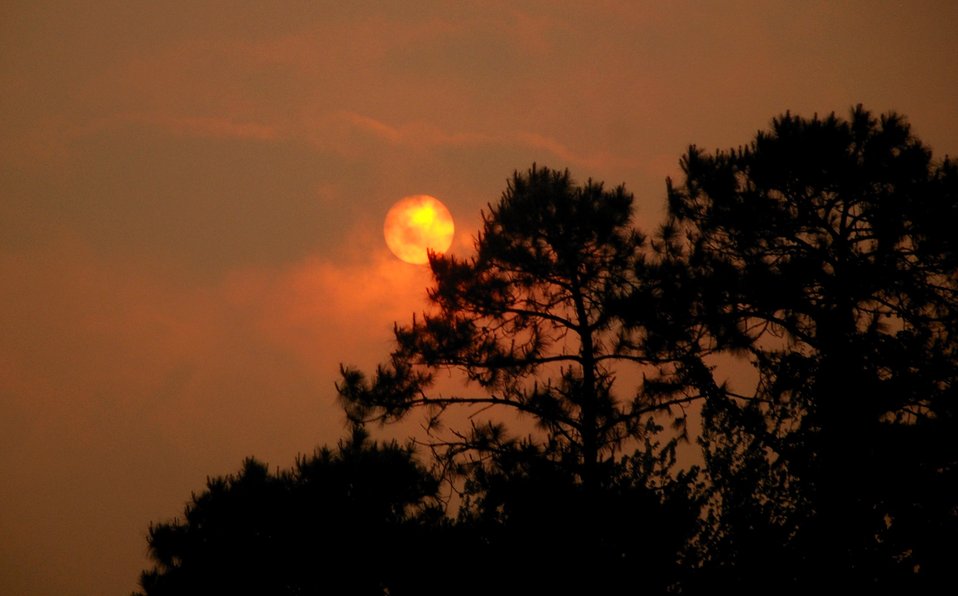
sun and smoke

Alligator River National Wildlife Refuge, NC